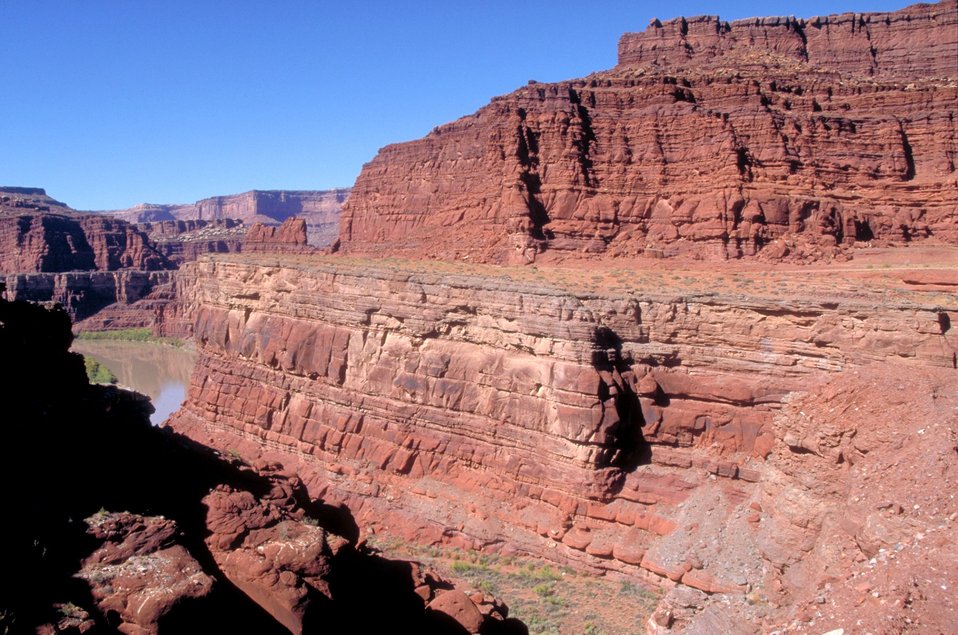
Colorado River near the Shafer Trail.